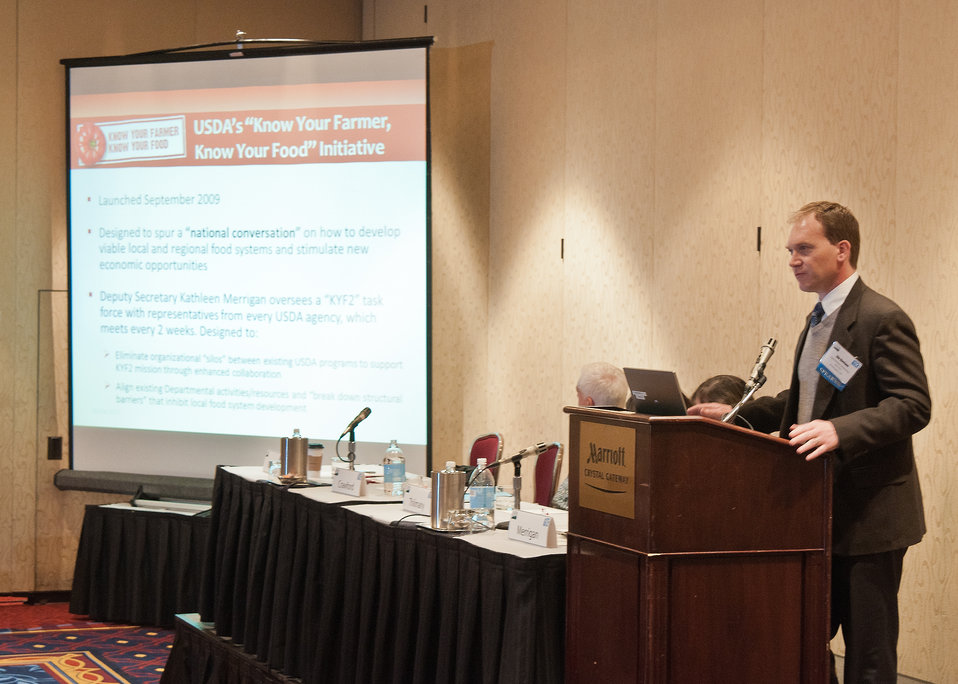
Jim Barham, Agricultural Marketing Service, United States Department of Agriculture, Washington, D.C., spoke at the Making Locally Grown Food More Available afternoon breakout session at the 2012 Agricultural Outlook Forum, “Moving Agriculture Forward, Growing, Innovating and Celebrating 150 Years” held at the Crystal gateway Marriott Hotel Arlington, Virginia, Friday, February 24, 2012. The session explored what is driving demand for local foods, the challenges local food producers face trying to market their products and what is being done to facilitate local food marketing.